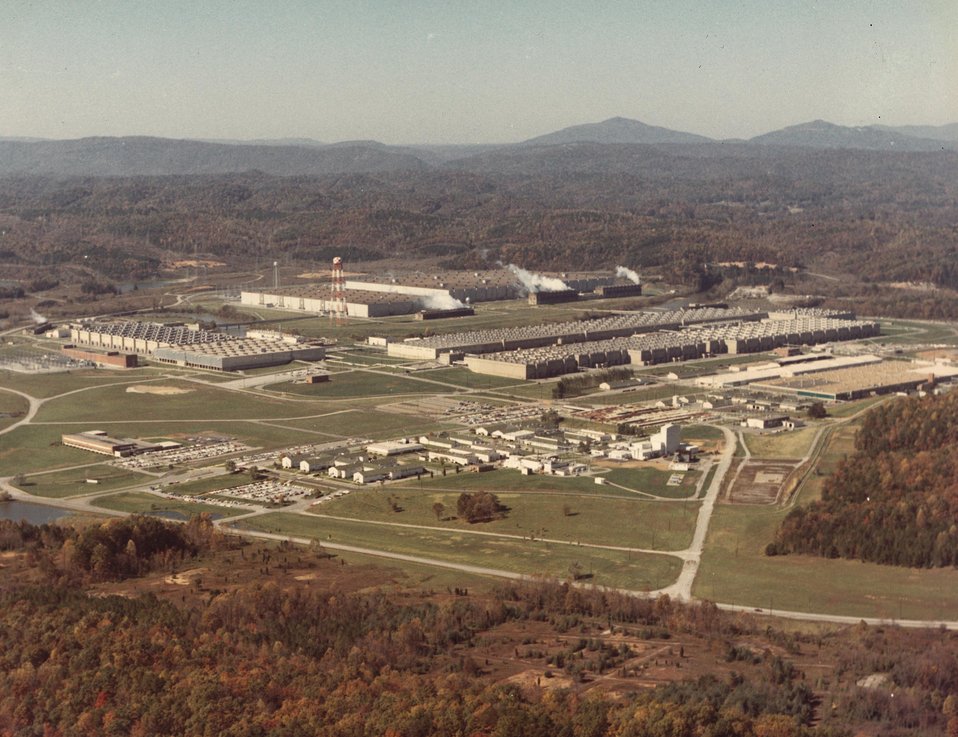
The Energy Research and Development Administration's Gaseous Diffusion Plant at Oak Ridge, Tennessee.